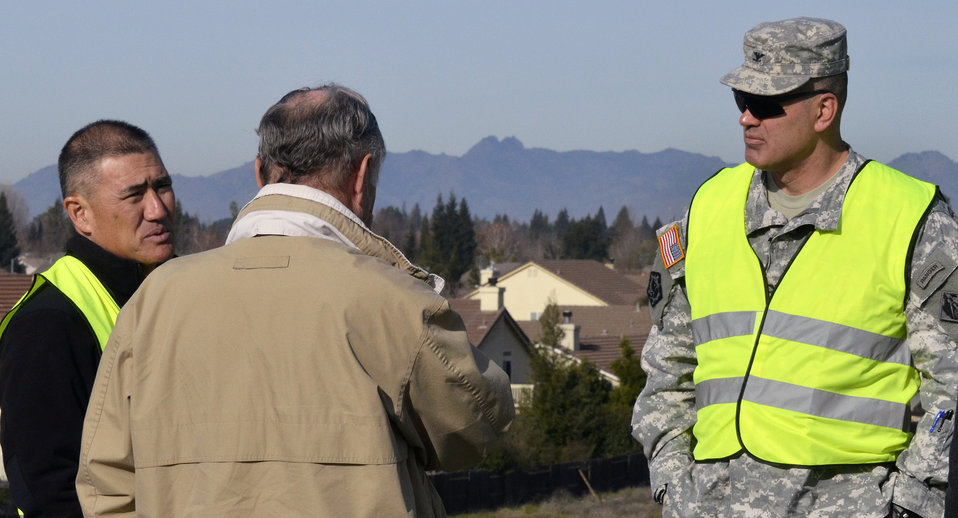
Sutter Butte scene

Mike Inamine (left), executive director for the Sutter Butte Flood Control Agency, describes the proposed Feather River West Levee Project in Yuba City, Calif., Jan. 22, 2013, to a contingent from the U.S. Army Corps of Engineers Sacramento District, led by District Commander Col. Bill Leady. This SBFCA project aims to provide 200-year flood protection for Biggs, Gridley, Live Oak and Yuba City plus 100-year flood protection for the rural area of the river basin south of the four townships.